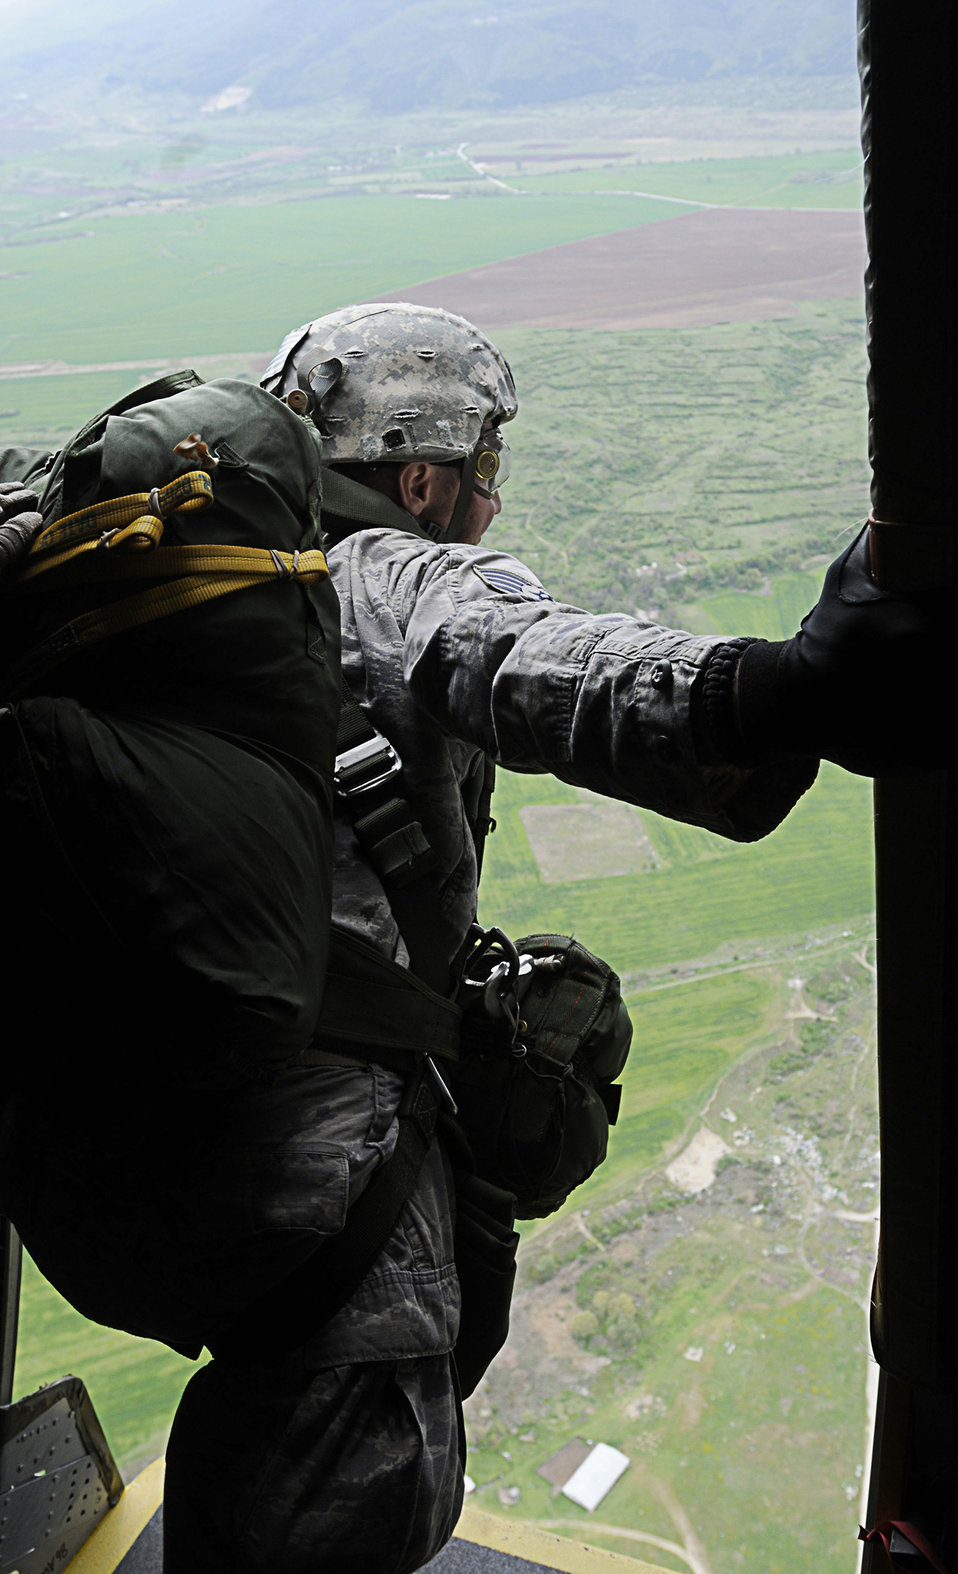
Thracian Spring 2011

Staff Sgt. Stephen Baker looks out of a C-130J Super Hercules troop door in preparation for a joint static-line jump April 29, 2011, in support of Thracian Spring 2011 in Plovdiv, Bulgaria. Sergeant Baker is an airborne coordinator assigned to the 435th Security Forces Squadron.